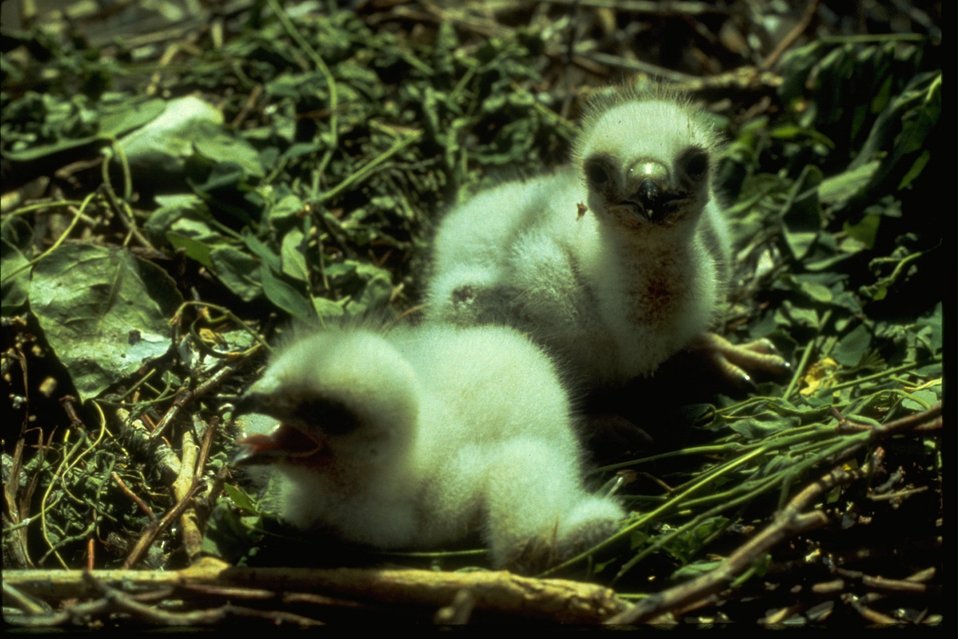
Baby hawks sitting in nest.